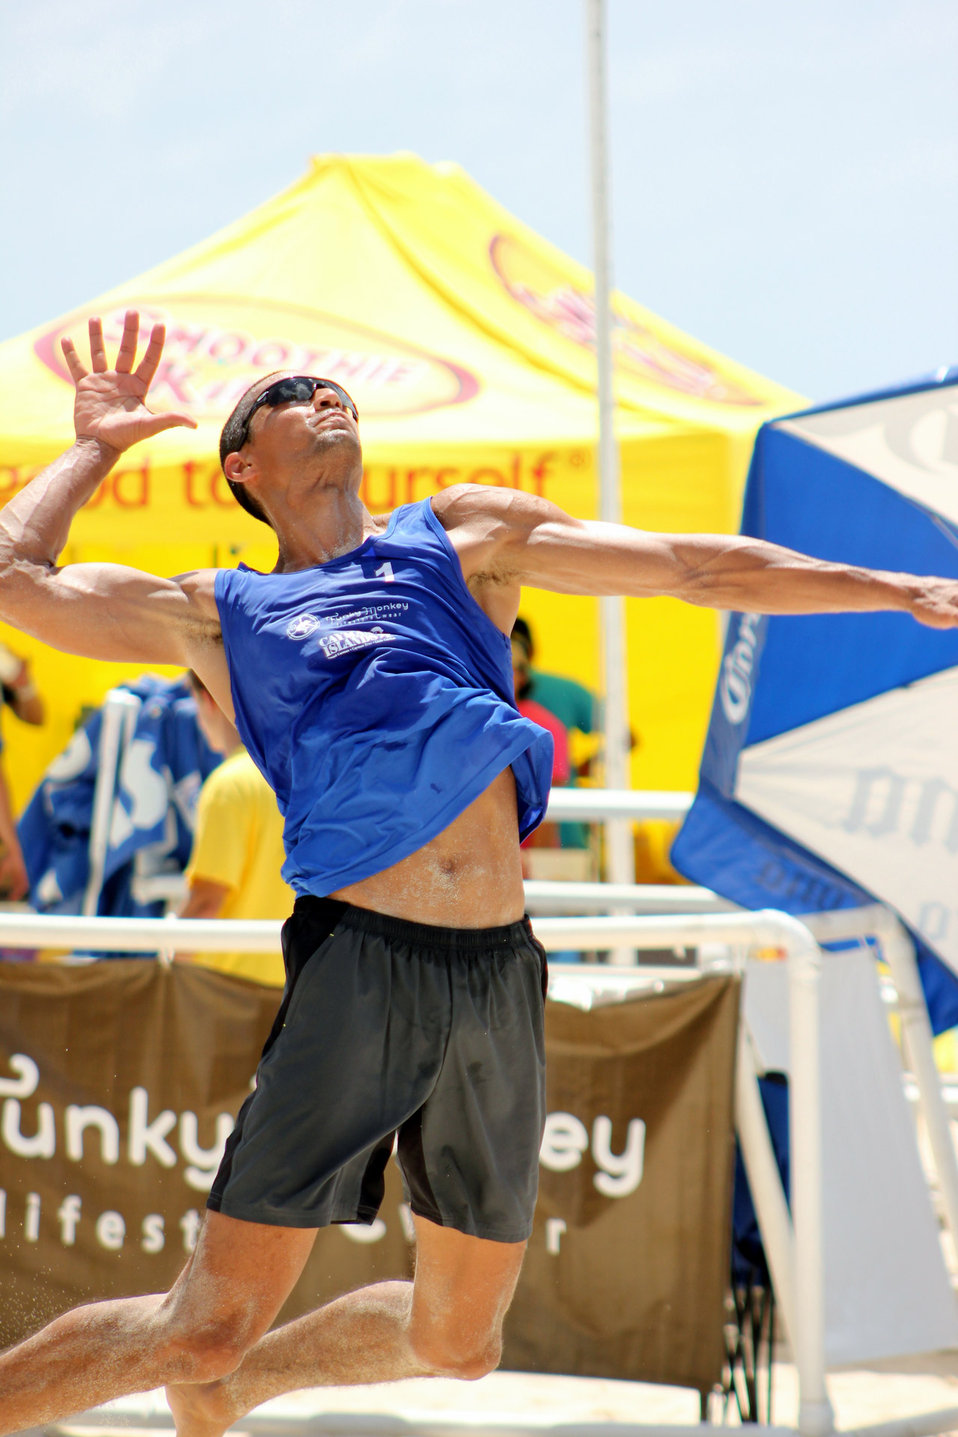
Volleyball

Impressive volleyball player.